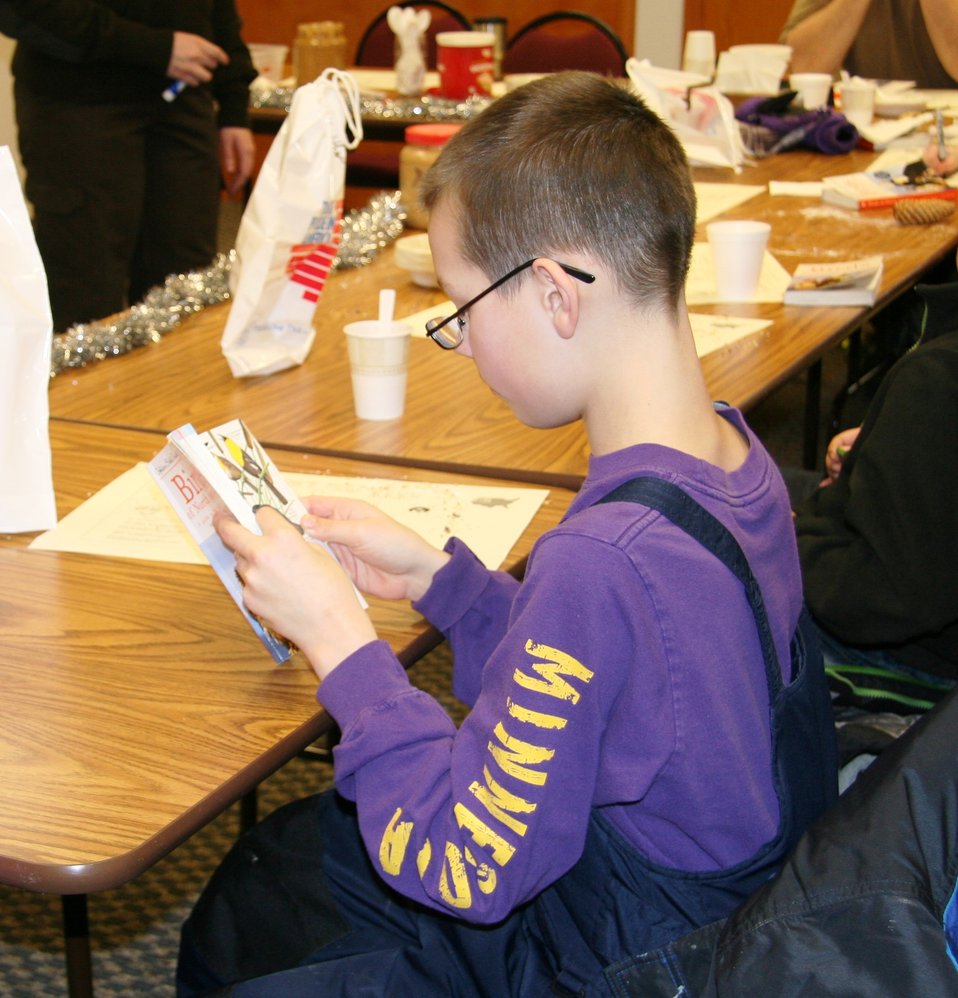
Young child using bird ID book

After making treats, bird ID guides were handed out and participants located the birds they spotted during their bird walk